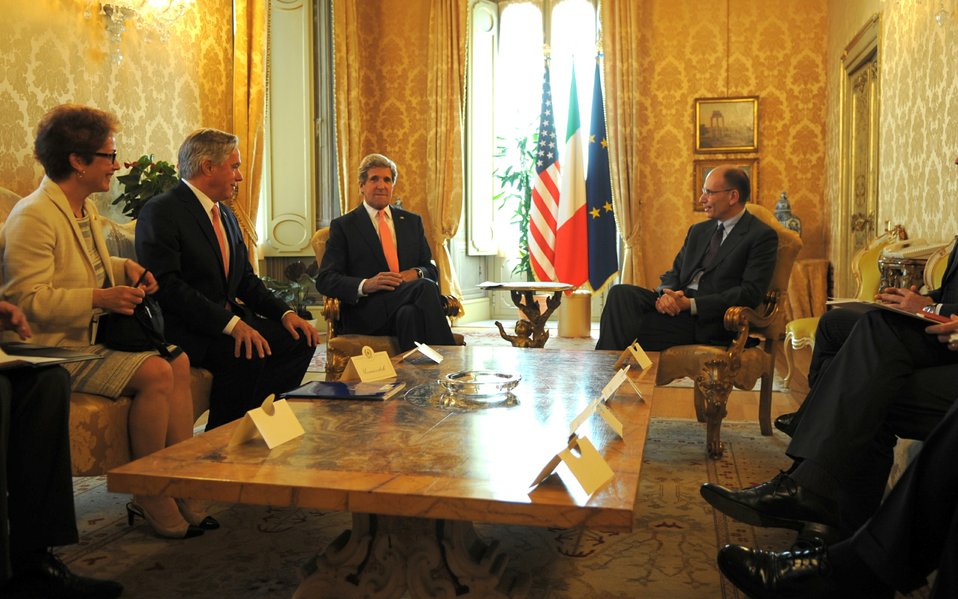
Secretary Kerry Meets Italian Prime Minister Letta

U.S. Secretary of State John Kerry meets with Italian Prime Minister Enrico Letta at Palazzo Chigi in Rome, Italy, on May 9, 2013.